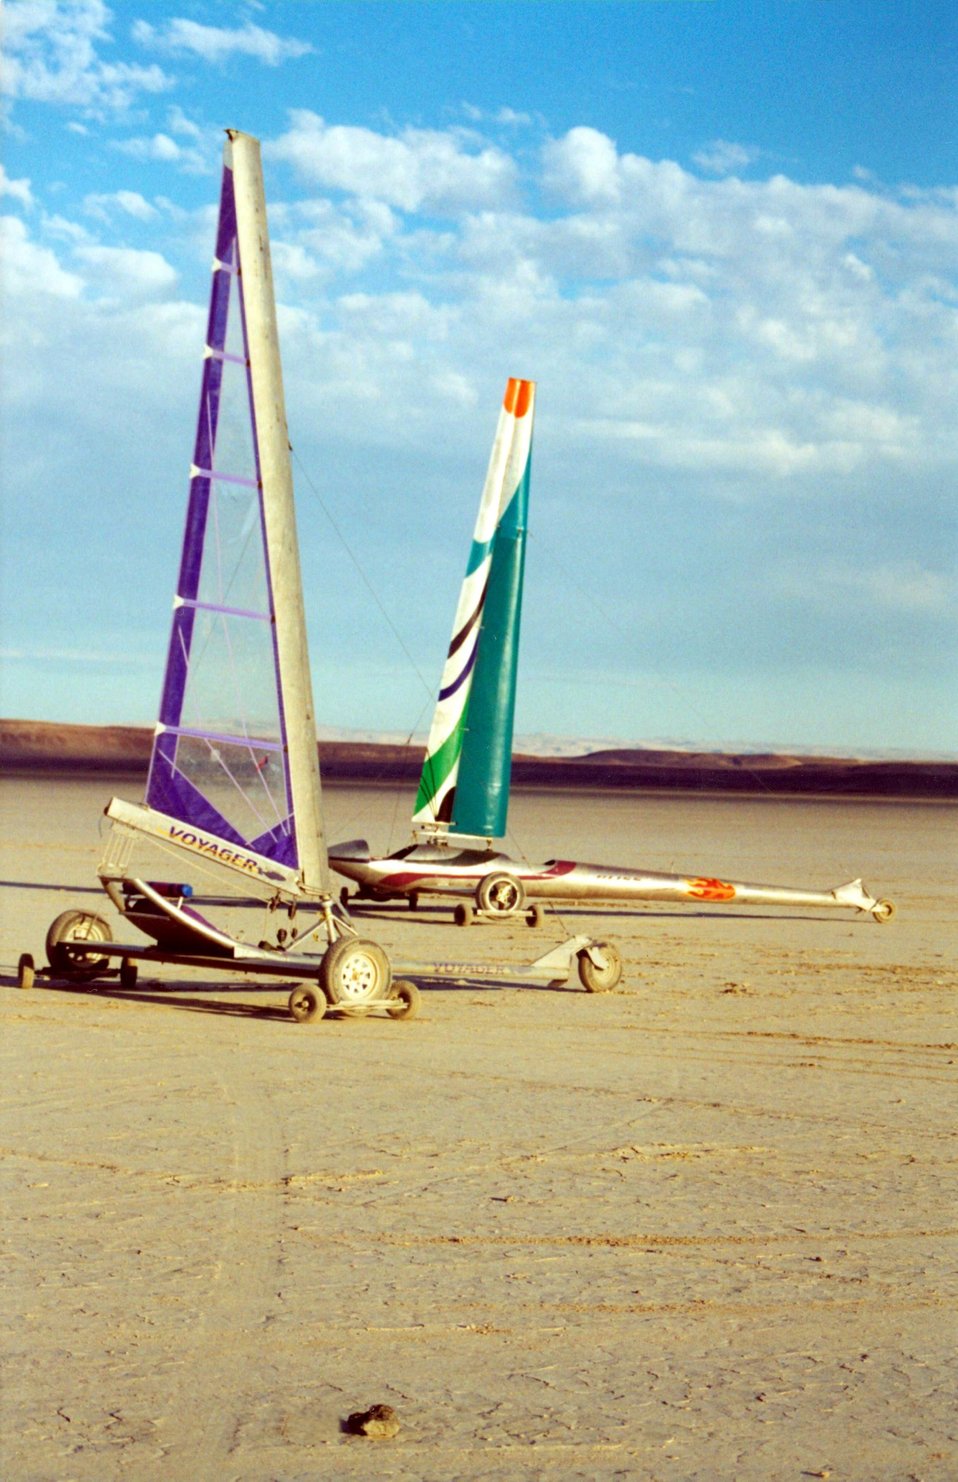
Sand Saling on the Alvord Desert in eastern Oregon.